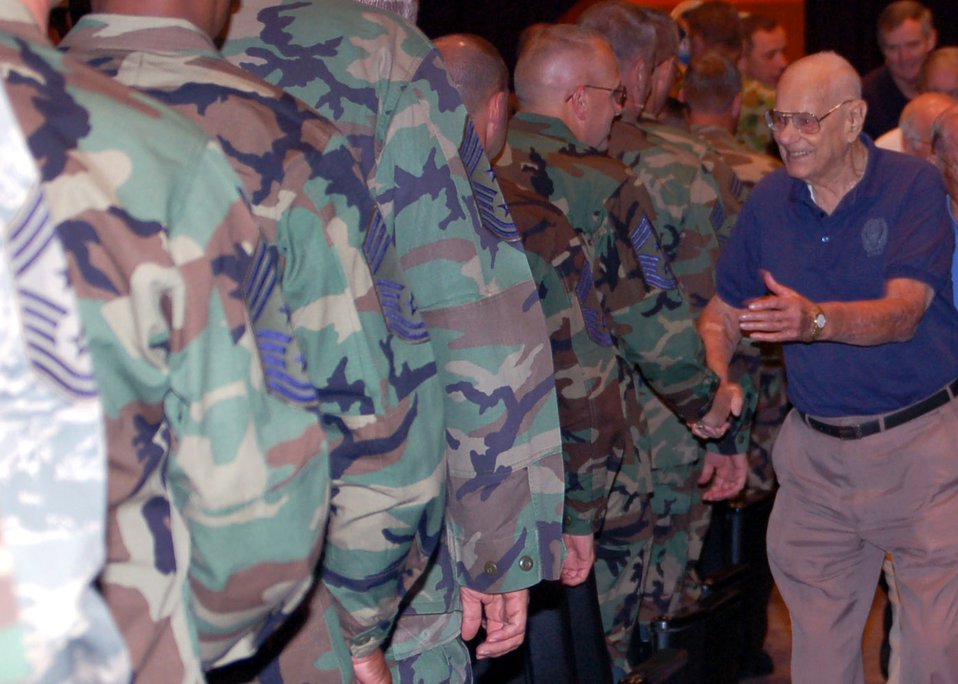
Enlisted leaders gain from summit outcome

Chief Master Sgt. of the Air Force Paul Wesley Airey shakes the hands of senior enlisted leaders as he departs the auditorium at the Air Force Senior NCO Academy July 26 at Maxwell Air Force Base's Gunter Annex, Ala. Chief Airey, the first chief master sergeant of the Air Force, sat on the Chief Master Sergeant of the Air Force Panel where he discussed issues affecting Airmen during the Senior Enlisted Leader Summit.